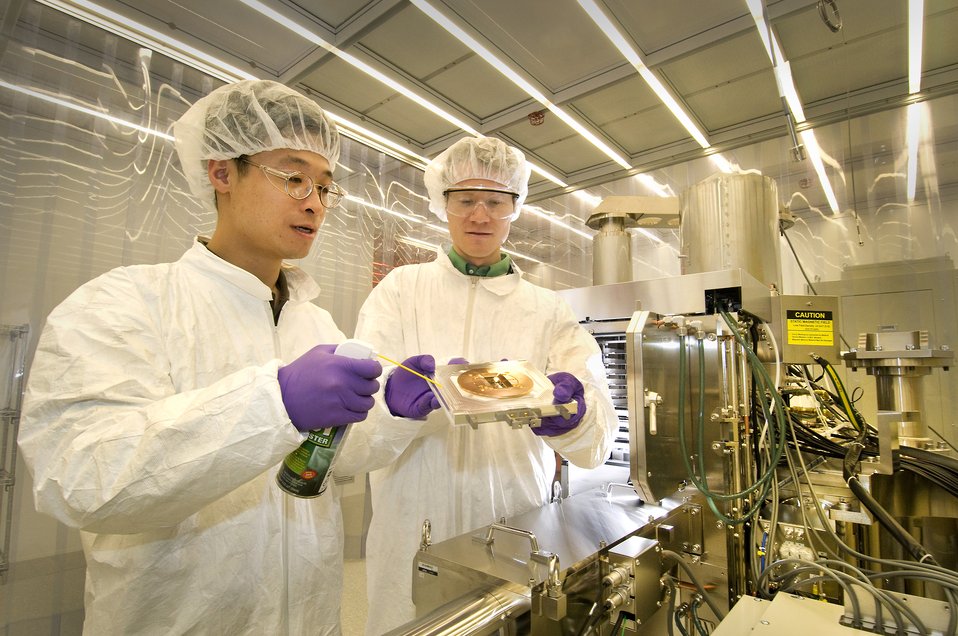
The Center for Function Nanomaterials at Brookhaven National Laboratory is an internationally recognized, user-oriented research facility.
The Center for Functional Nanomaterials at Brookhaven National Laboratory is an internationally recognized, user-oriented research facility. Its dual mission is to serve as an open facility for the nanoscience and nanotechnology research communities and to advance the science and technology of nanomaterials that address the nation's energy challenges. External Academic and Government Users of the CFN have investigated diverse research topics, such as efficient catalysts, fuel cell chemistries and architectures, and photovoltaic (solar cell) components.